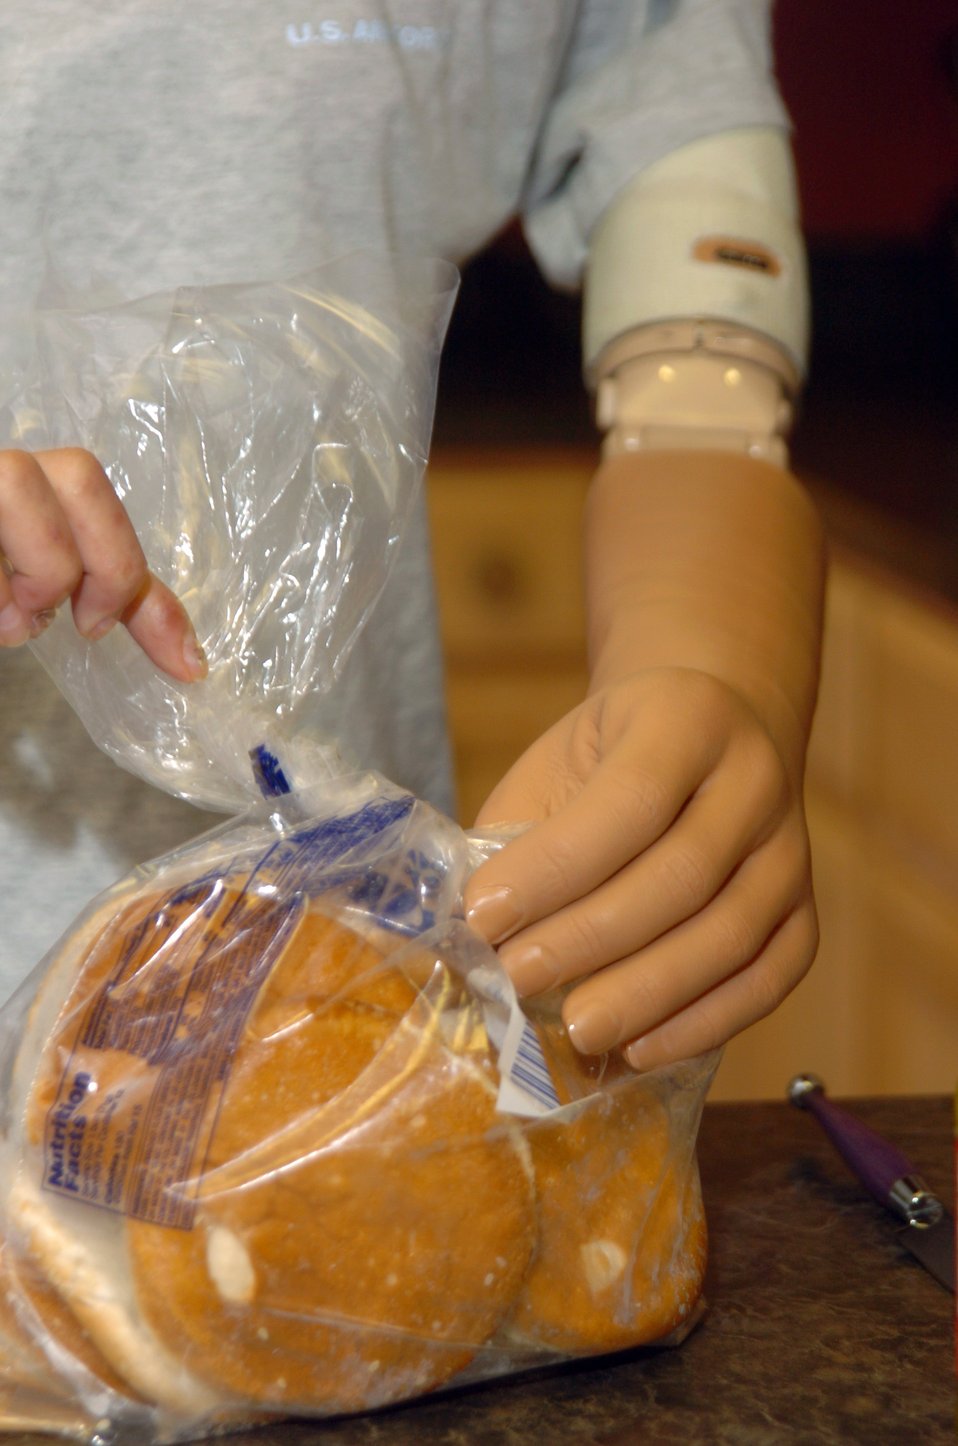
Airman wants to continue to serve

During a life skills therapy session, Senior Airman Dan Acosta uses his prosthetic arm to grip a bag of sandwich rolls Thursday, Feb. 23, 2006, in the amputee rehabilitation clinic at Brooke Army Medical Center in San Antonio. A mock apartment in the center helps patients get used to completing common tasks with their prosthetic limbs.